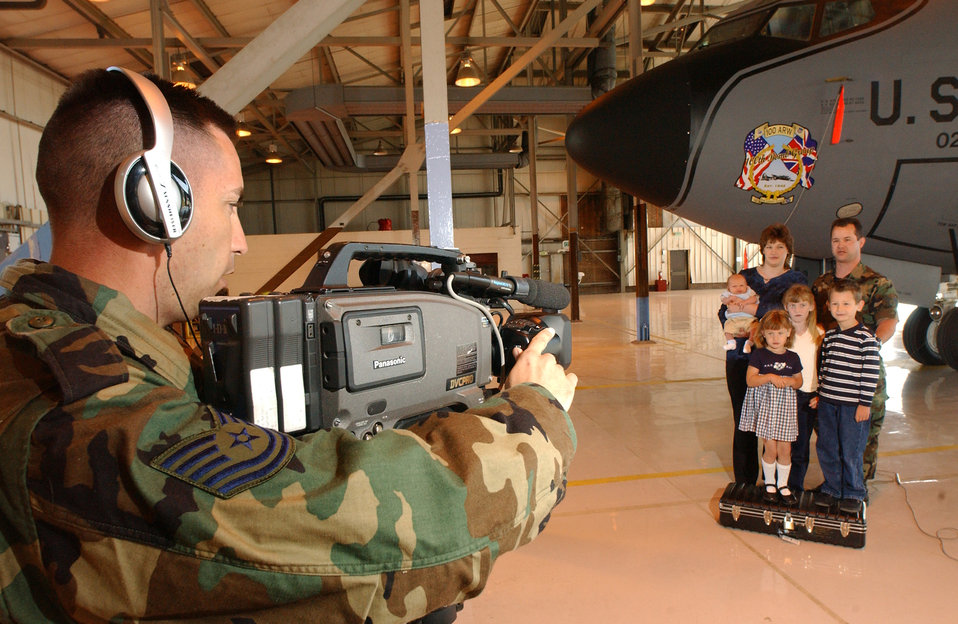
Happy Holidays

ROYAL AIR FORCE MILDENHALL, England -- An Airman and his family wish their family and loved ones a happy holidays here Sept. 15. The Hometown News Holiday Greetings Team annually records the holiday greets of service members stationed overseas and sends the messages back to the member's hometown so family and friends can see and hear them on local television and radio stations.